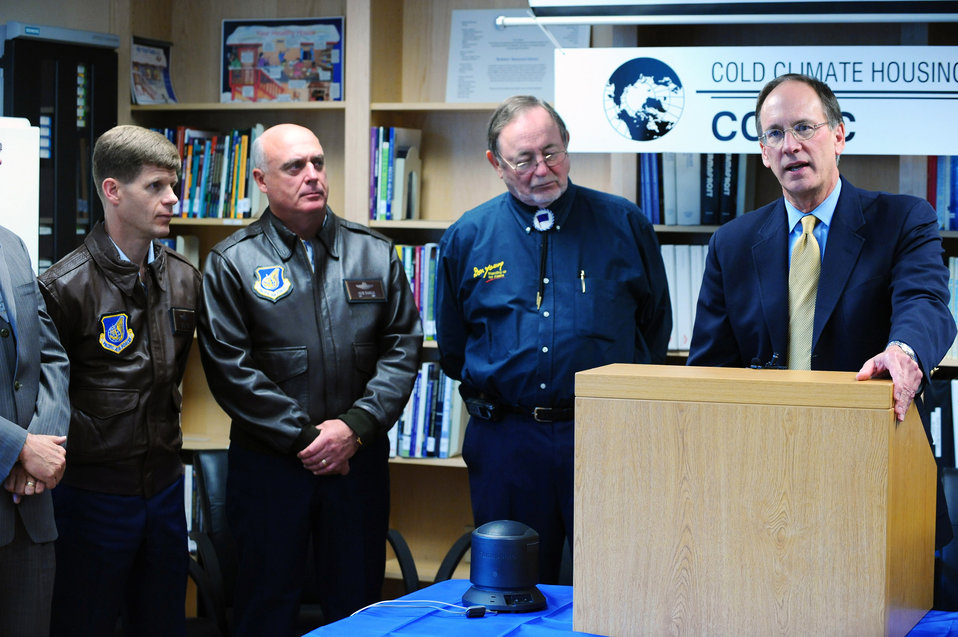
Eielson possible home for alternative fuels facility

Under Secretary of Energy, Bud Albright, talks July 18 at the Alaska Strategic Energy Summit in Fairbanks, Alaska. The secretary speaks about his support for the proposed coal-to-liquid facility project, which could be constructed at Eielson Air Force Base, Alaska, in an effort to utilize a 50/50 synthetic and JP-8 fuel blend on aircraft and ground vehicles.